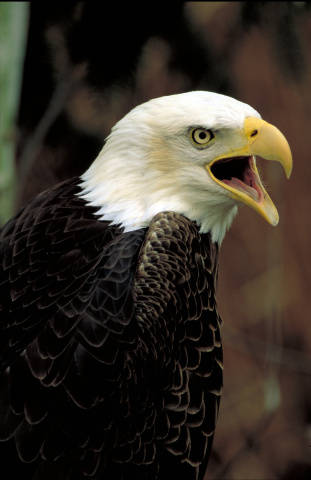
bald eagle